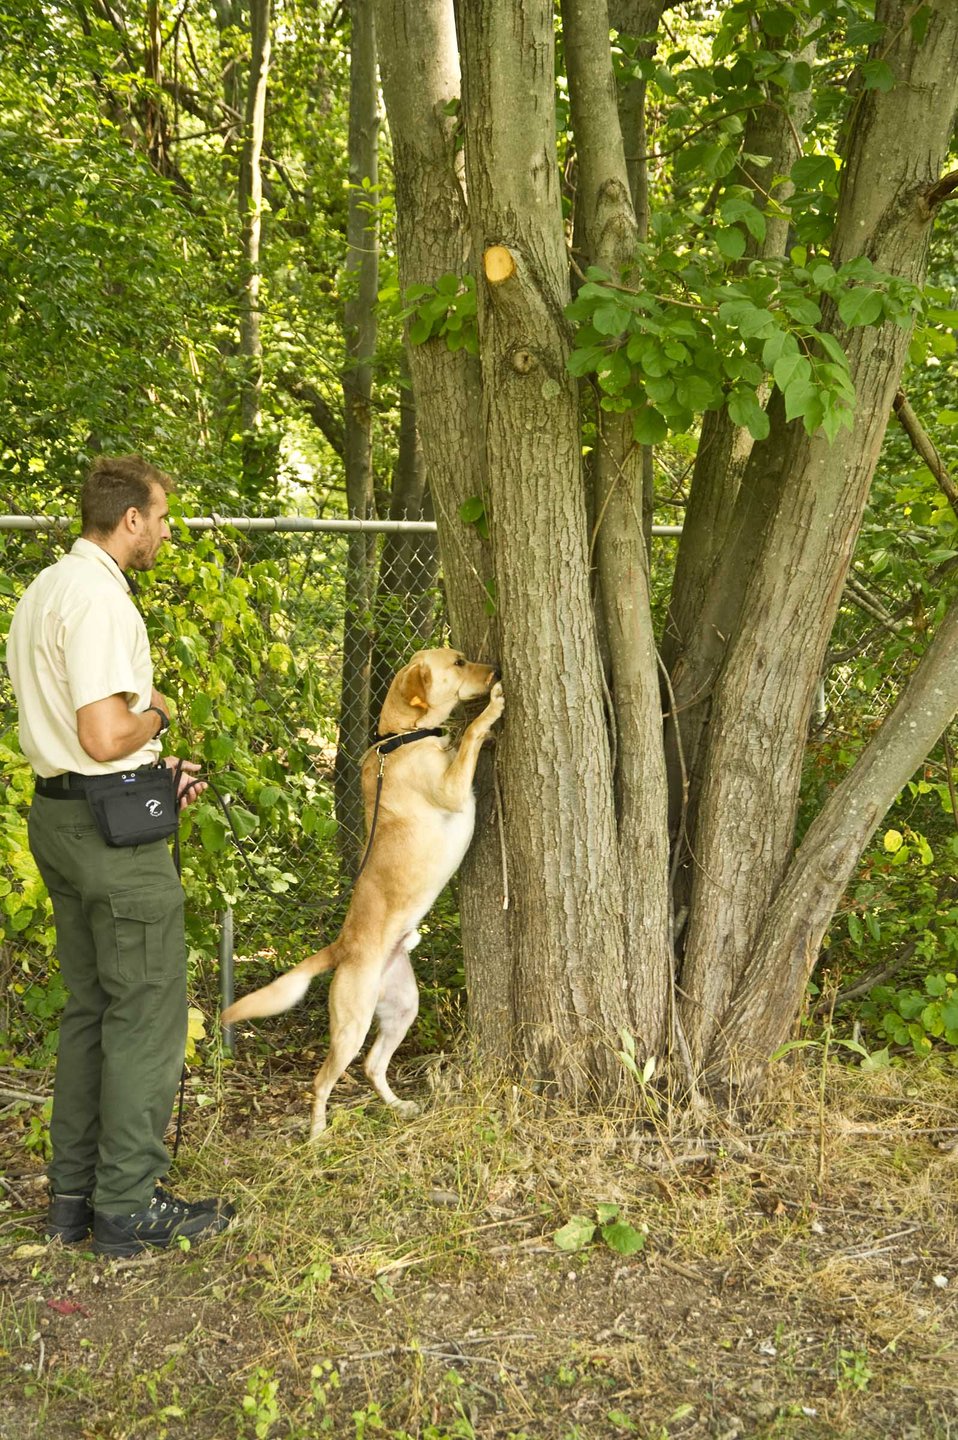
U.S. Department of Agriculture (USDA) Animal and Plant Health Inspection Service (APHIS) training specialist Joseph Chopko works with Asian Longhorned Beetle (ALB) Detector Dog RJ to detect the beetle “frass” or excrement in a tree in Worcester, MA on Aug. 1, 2012. The ALB is an invasive insect that is killing trees in Massachusetts, New York, New Jersey and Ohio. Four dogs are currently being trained to recognize beetle “frass” that the beetle leaves behind. This study is part of an important mission to protect neighborhood trees and this country’s valuable forest resources from this harmful pest.